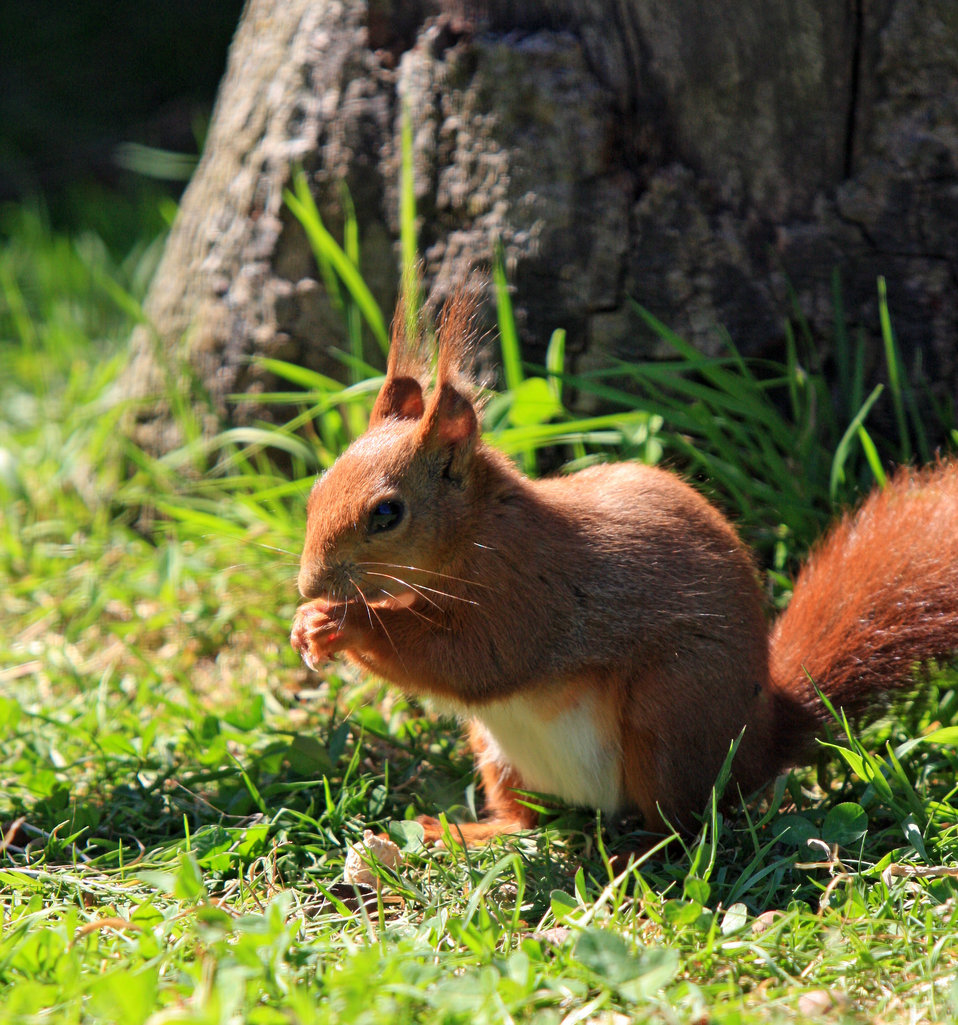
Red squirrel

Close-up portrait of a cute little red squirrel.